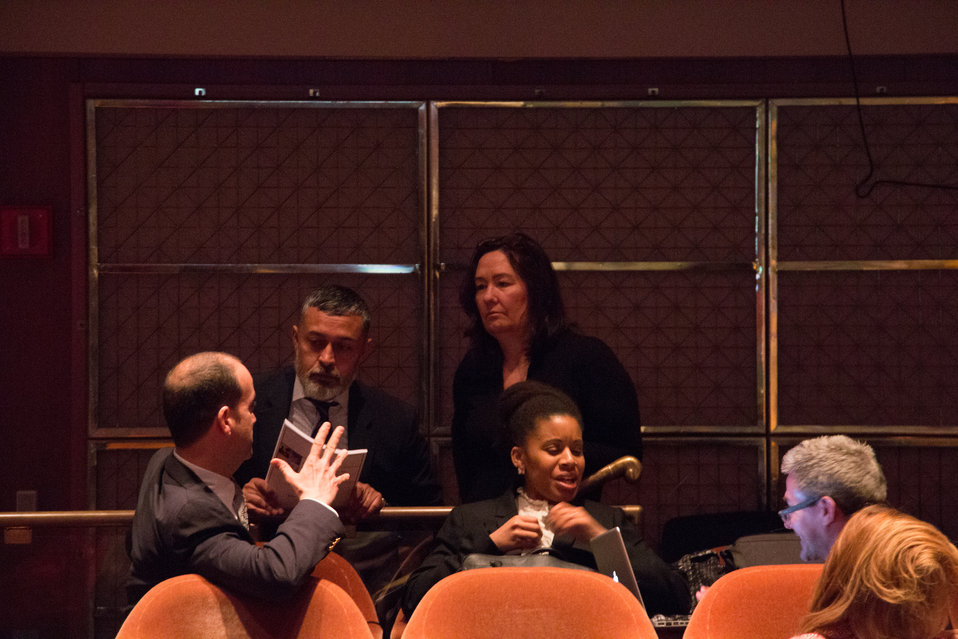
VHAP Launch (370 of 511)